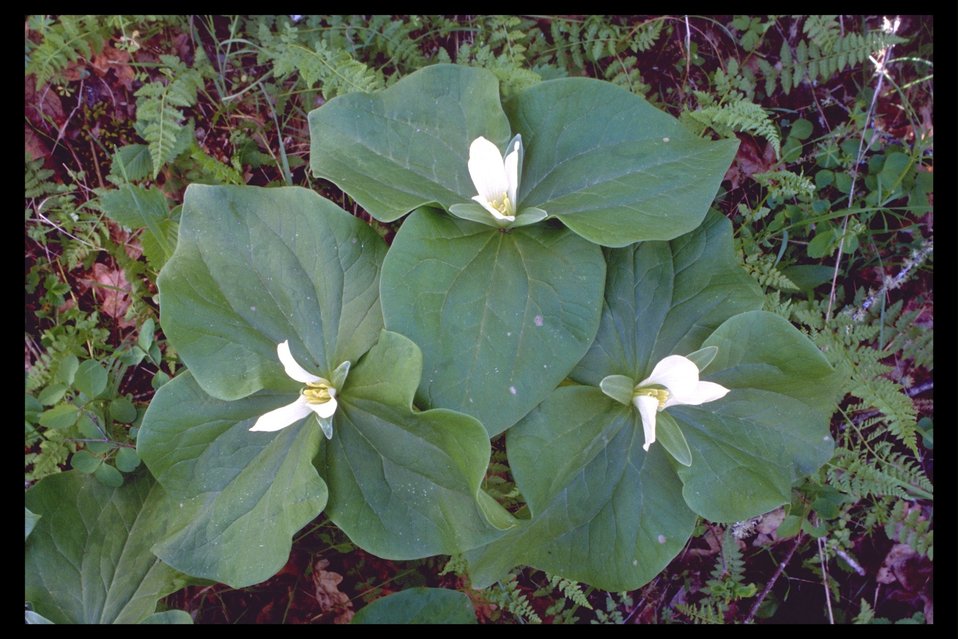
Wake-Robin Trillium (Trillium albidum) in Shady Cove.